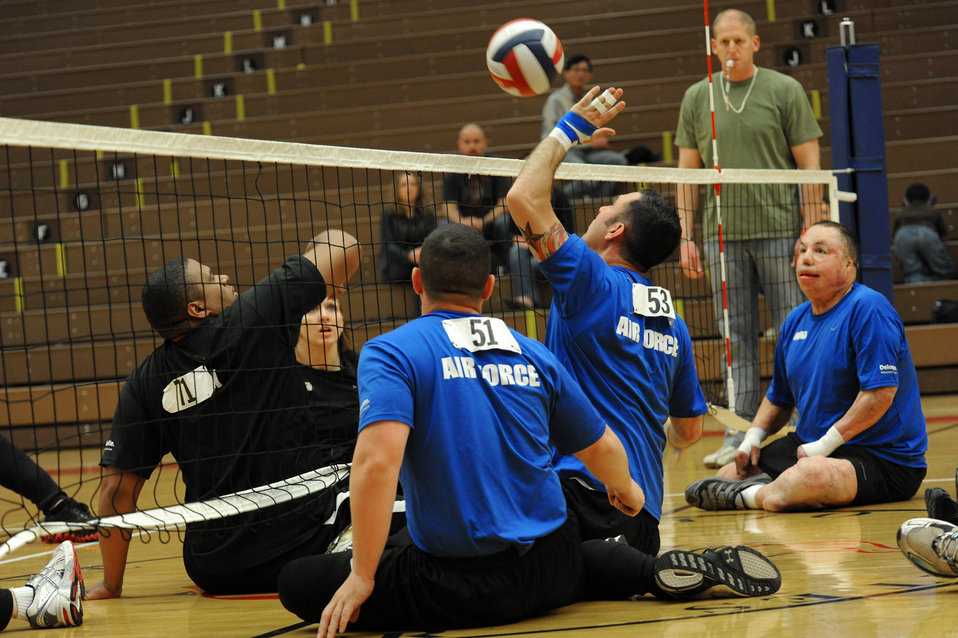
Warrior Games Volleyball

Air Force Warrior Games athlete, Staff Sgt. Christoper D'Angelo, hits the ball during the Warrior Games sitting volleyball match against Army at the U.S. Olympic Training Center in Colorado Springs, Colo., May 13, 2010.